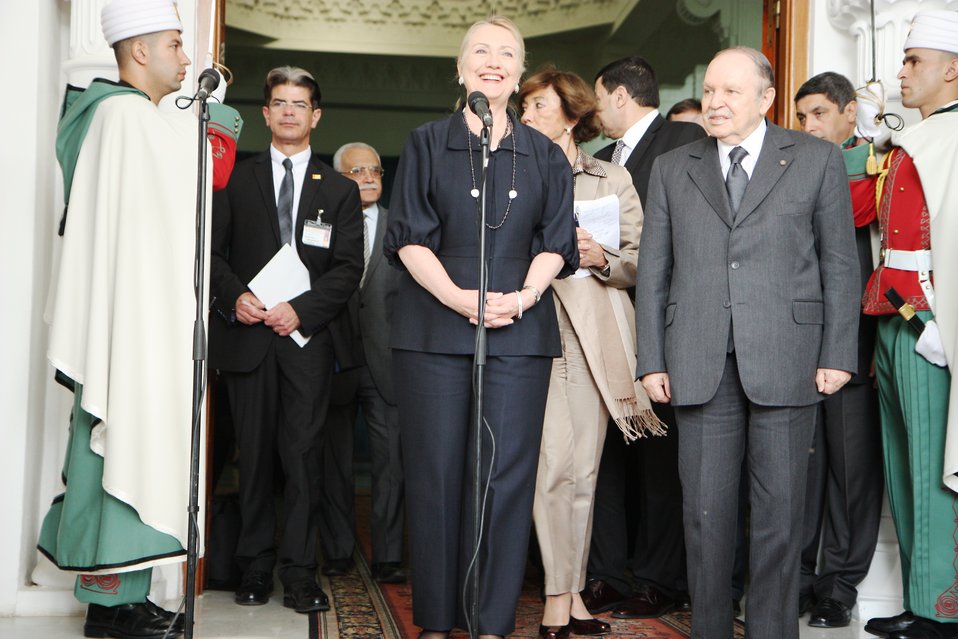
Secretary Clinton Addresses Reporters in Algiers

U.S. Secretary of State Hillary Rodham Clinton addresses reporters after meeting with Algerian President Abdelaziz Bouteflika in Algiers, Algeria, October 29, 2012.